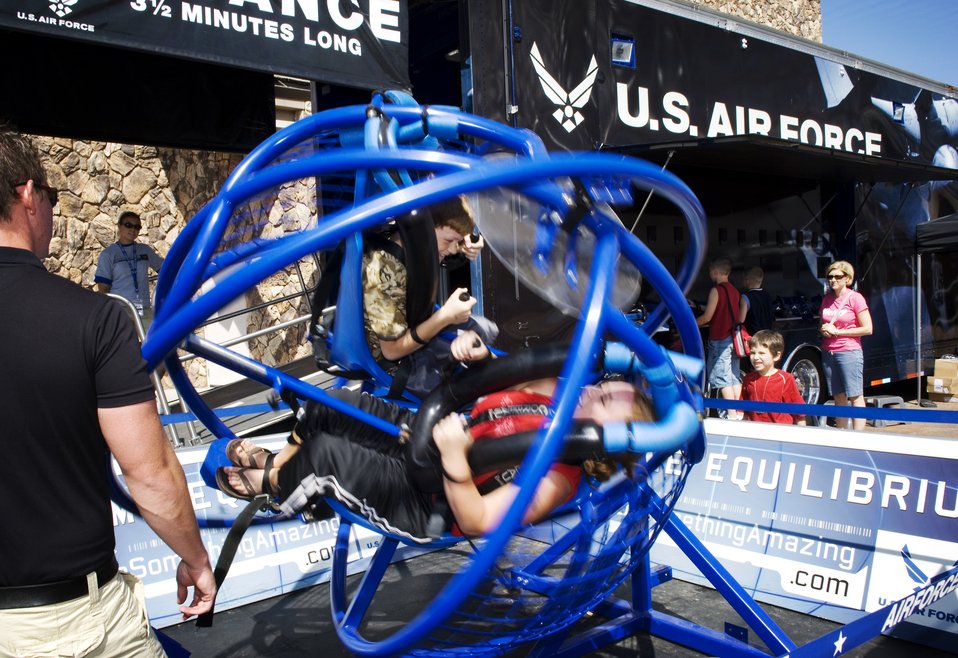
Air Force Week in the Heartland reaches out to Omaha zoo

Abi and Dean Finley ride the Extreme Equilibrium device at the Do Something Amazing display Aug. 12 at the Henry Doorly Zoo in Omaha, Neb. Zoo visitors had a chance to see an F-16 Fighter Falcon, a motion simulator, video simulators and Air Force Honor Guard drill team performances.